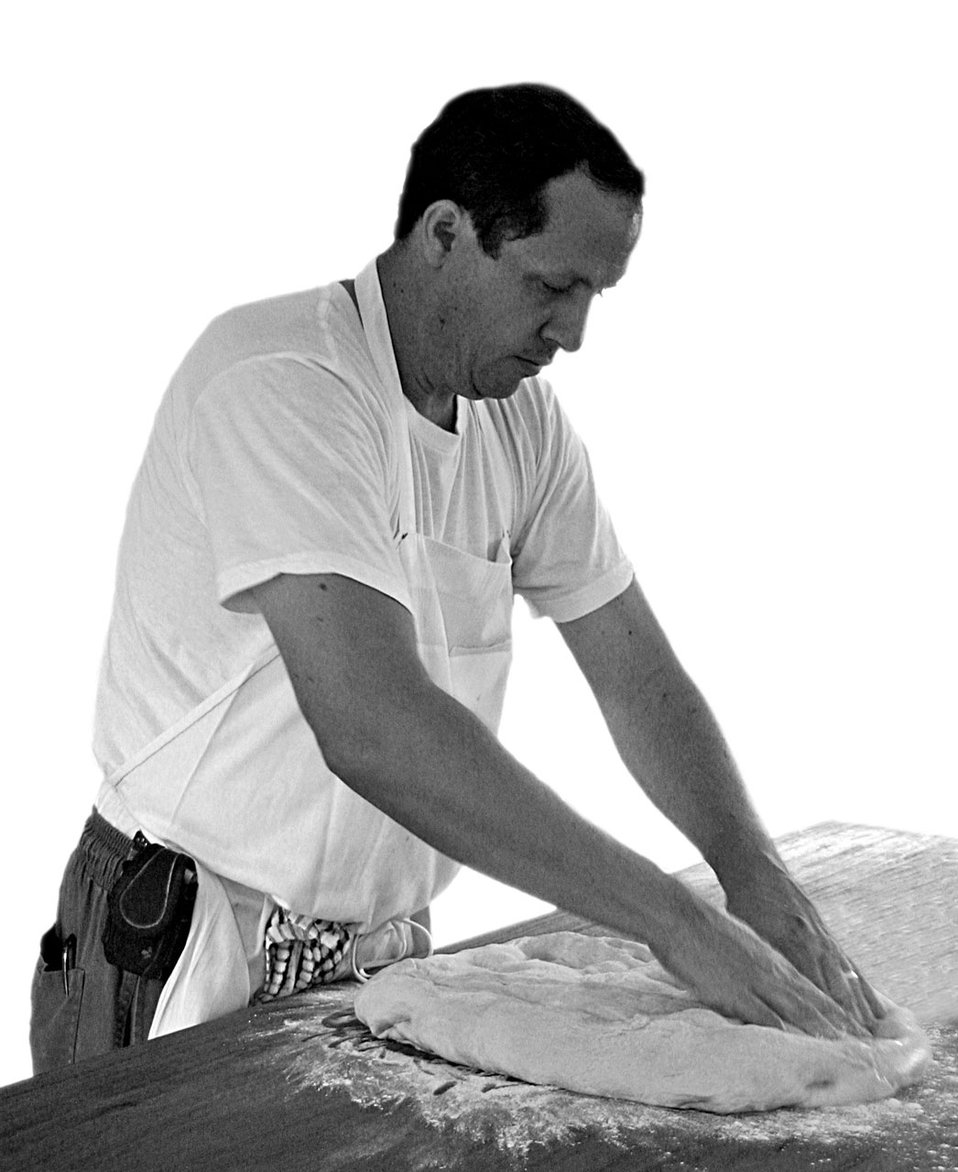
Making bread

Baker kneading dough.